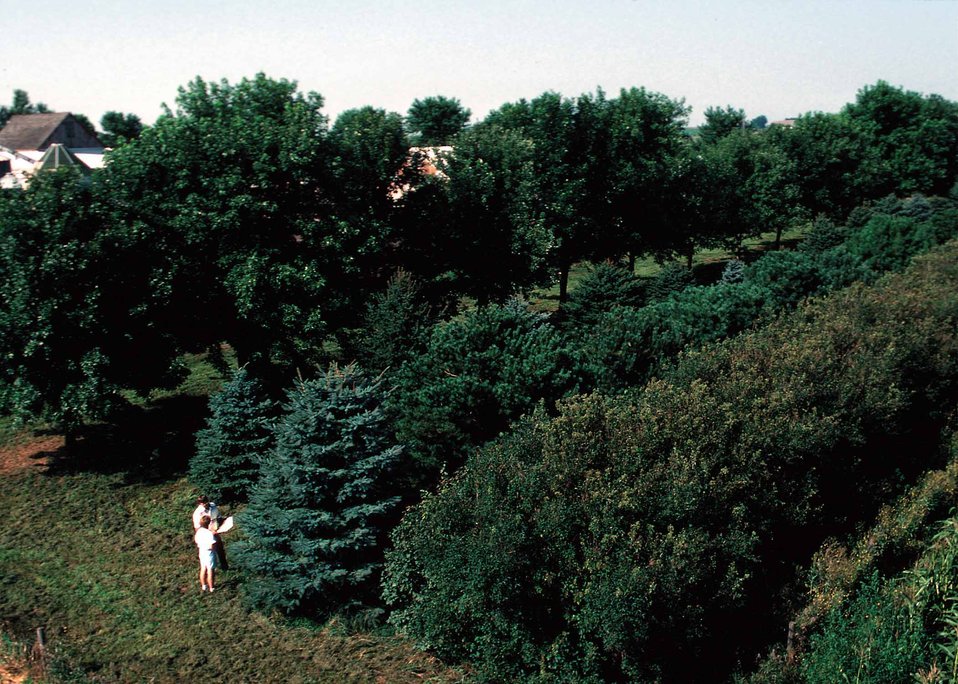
Multi-row farmstead windbreak in Pocahontas County, Iowa, includes shrubs, conifers, and deciduous trees.